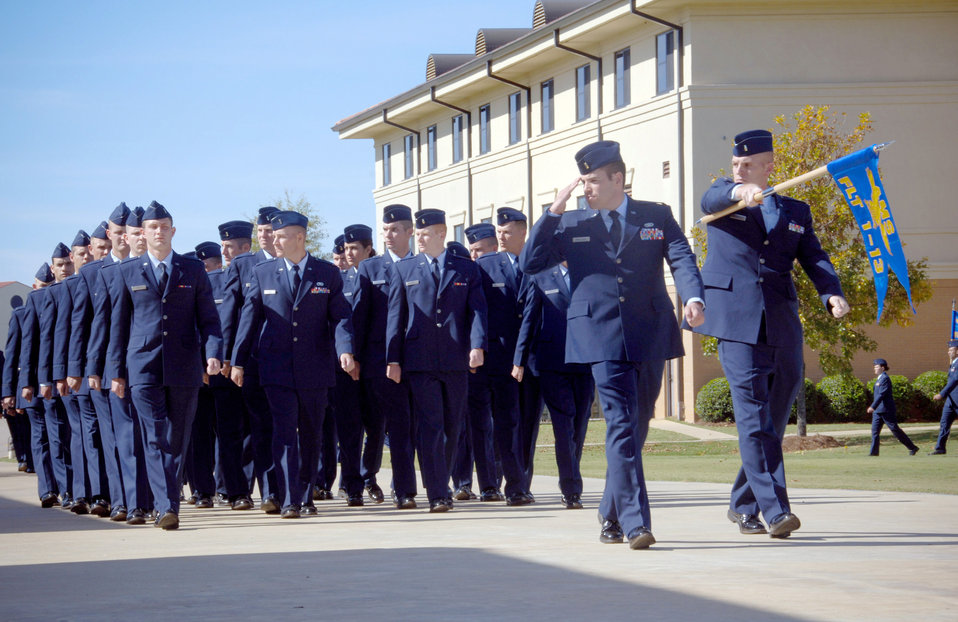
Air National Guard graduates first class from Maxwell's Officer Training School

New Air National Guard second lieutenants pass in review in their graduation parade Nov. 13, 2009 at Maxwell Air Force Base, Ala. The Guard officers are part of the first class to graduate from the newly formed Det. 12 since the Academy of Military Sciences moved in October to the Maxwell AFB Officer Training School from McGhee Tyson Air National Guard Base, Tenn.